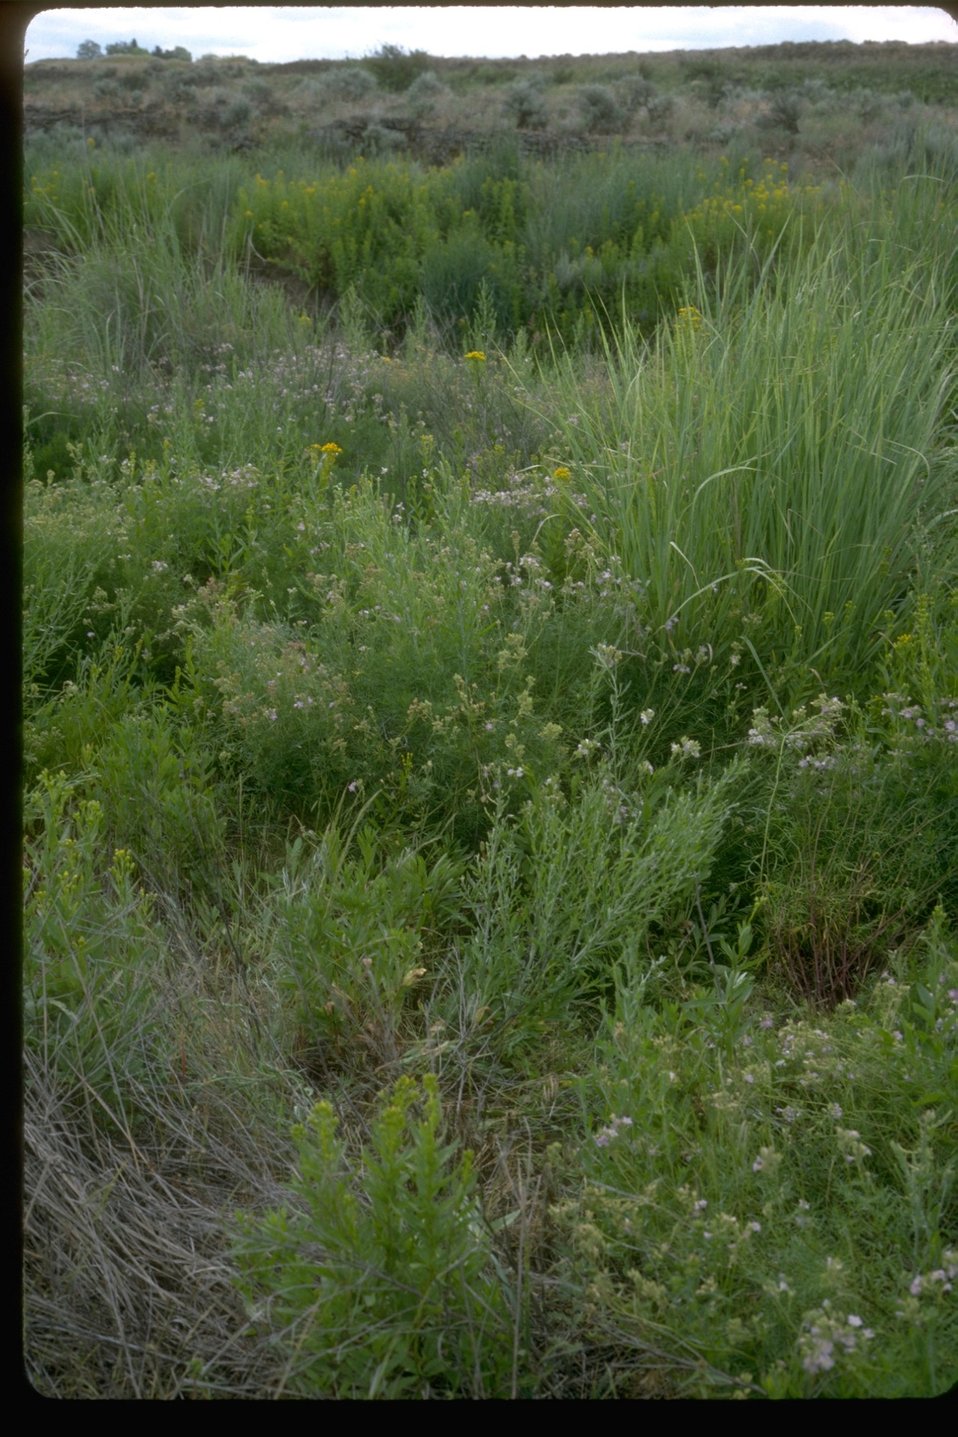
Knapweed treatment site in Lincoln County, Washington, allows State-classified endangered plant Polemonium pectinatum to return.